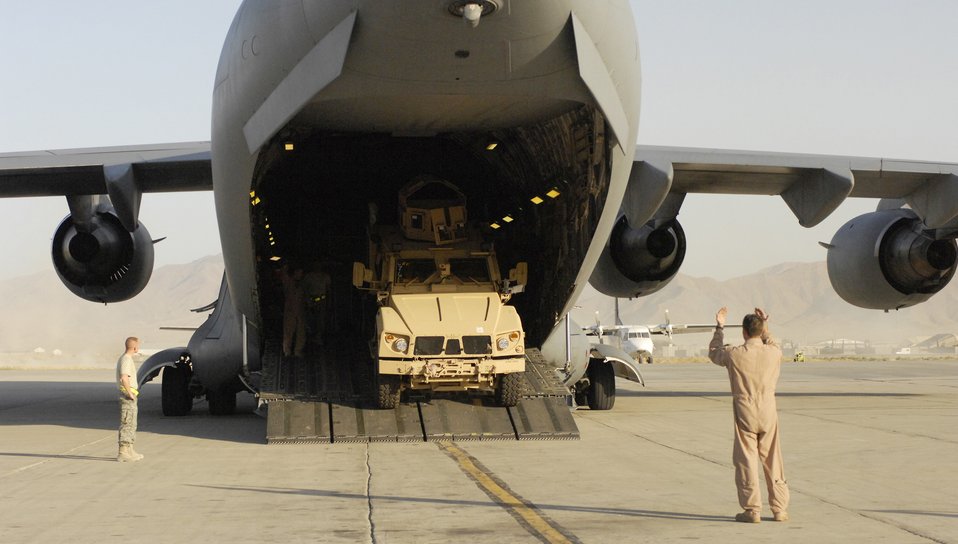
A C-17 Globemaster III loadmaster spots the driver of a mine-resistant, ambush-protected all-terrain Vehicle as he drives it off the aircraft at Bagram Airfield, Afghanistan, Oct. 1, 2009. The M-ATV's are the first of their kind in Afghanistan and support small-unit combat operations in highly restricted rural, mountainous and urban environments that include mounted patrols, reconnaissance, security, convoy protection, communications, command and control, and combat service support. Transporting M-ATVs aircraft can be accomplished in a day, where sealift would require approximately 26 days. An order for more than 6,600 M-ATVs are expected to be fielded during the next year.